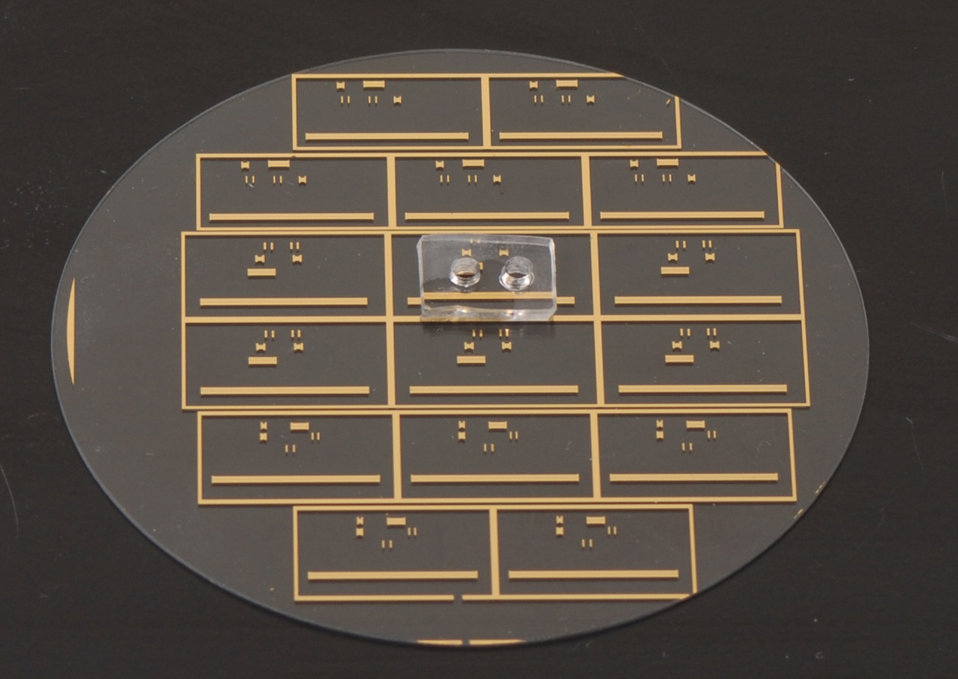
Lab-on-a-chip; Micro Microwave

Close up photograph of the NIST micro microwave oven showing its two major components: a glass disk with microwave transmission lines (gold) and a 1.25 centimeter wide polymer block containing a miniature chamber where fluids are heated.